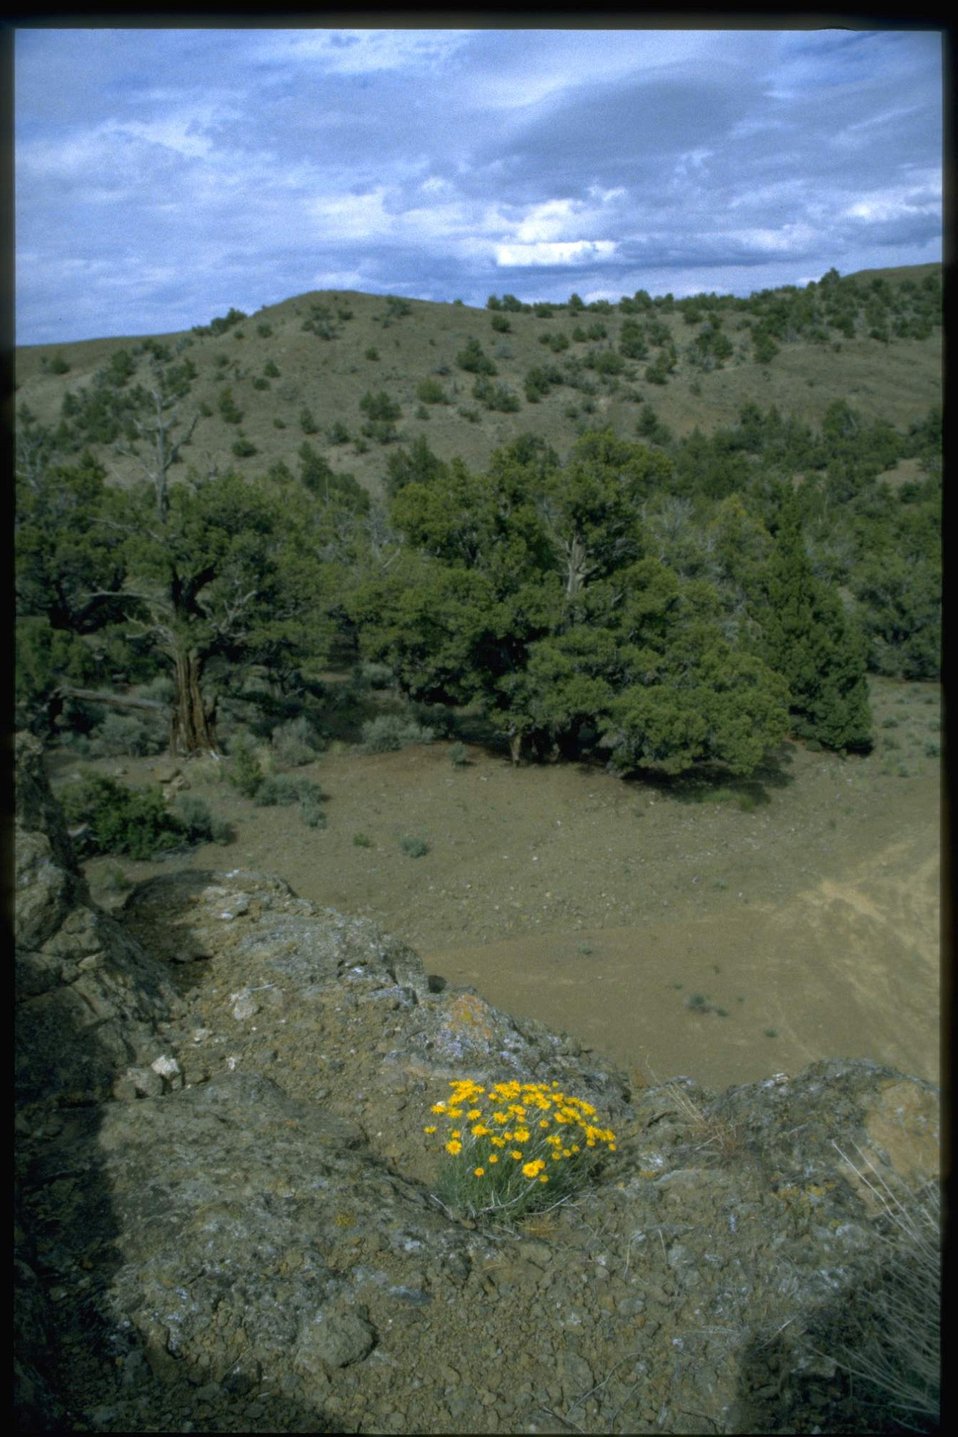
Far shot of buckwheat wildflower habitat.